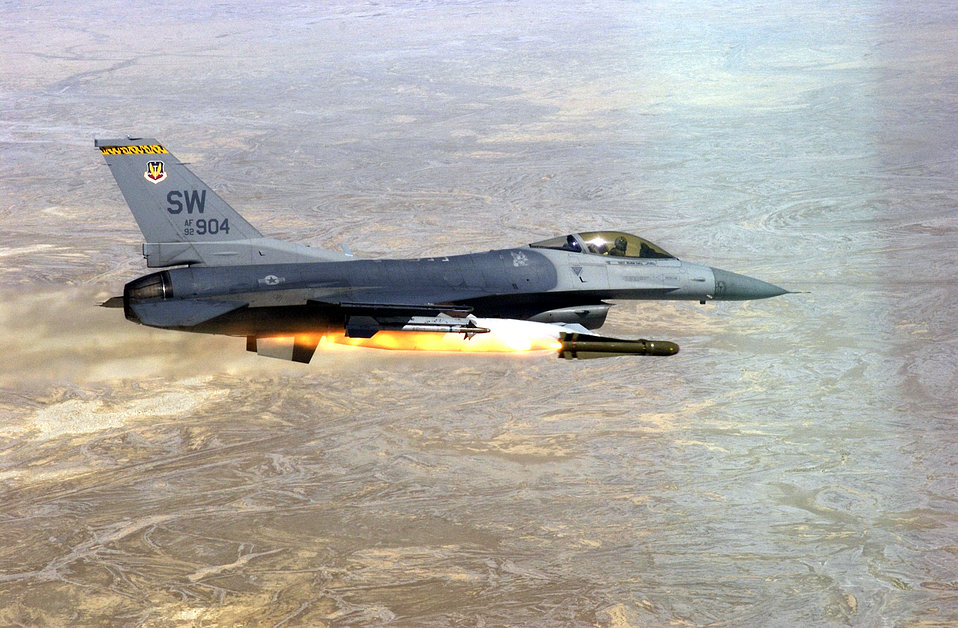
Combat Hammer

HILL AIR FORCE BASE, Utah -- Capt. Daniel Veal, an F-16CJ Falcon pilot with the 79th Fighter Squadron at Shaw Air Force Base, S.C., fires an AGM-65D Maverick missile at a target during an air-to-ground weapons system evaluation program named Combat Hammer. The mission took place over the Utah Test and Training Range.